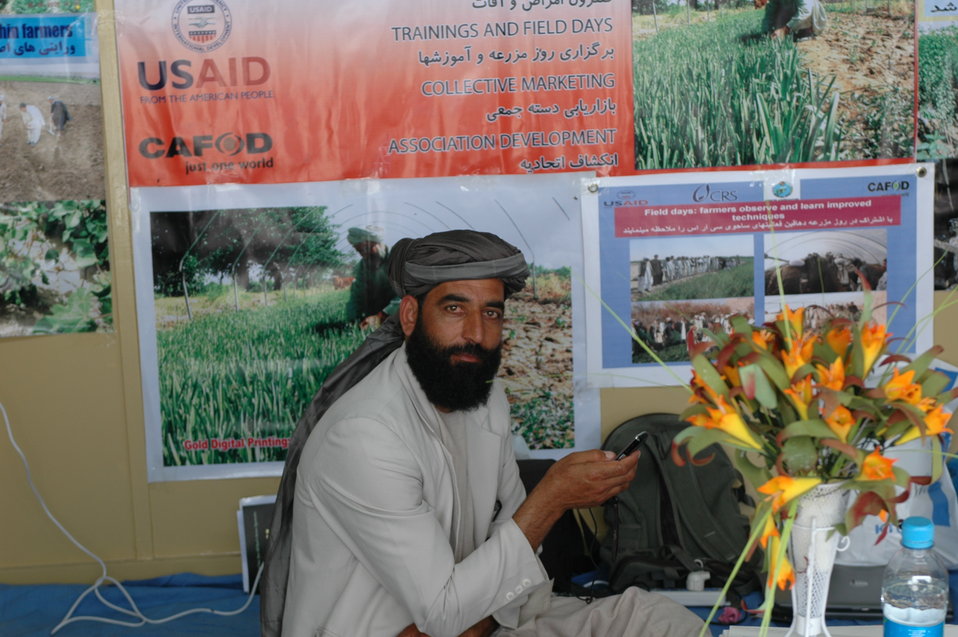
AgFair doing business2 052109 jfossler

On May 20, 2009, Ambassador Eikenberry joined government officials, farmers, agribusiness representatives, and international investors at the launch of the Kabul International AgFair on May 20. Held at the Ministry of Agriculture, Irrigation and Livestock’s Badam Bagh Demonstration Farm in Kabul, the fair showcases Afghanistan’s wealth of fresh produce, provides lucrative business opportunities, and demonstrates innovative agricultural technologies. It is expected to attract more than 50,000 participants from May 21-22.

U.S. Ambassador Karl Eikenberry and Afghan Acting Minister of Agriculture, Irrigation and Livestock (MAIL) Saleem Kunduzi gave opening remarks at the AgFair’s launch. “The United States Government is co-sponsoring national and regional AgFairs like this one to encourage trade and generate business opportunities in the agriculture sector,” Ambassador Eikenberry said. “In a country that is 80 percent rural, promoting licit crops and agriculture sector job creation are two essential steps to successful development in the region.”

Member of Parliament Abdul Salam Qazizada offered bold remarks, stating that we need to engage more with farmers in every province throughout the country.

Following the ceremony, Ambassador Eikenberry visited a number of vendors at the fair with Acting Minister Kunduzi and Mr. Qazizada. In speaking with farmers displaying their produce, Ambassador Eikenberry found that many have increased yields due to USAID assistance, have found regional buyers for their produce, and were grateful for the opportunities that AgFair provides.

Ambassador Eikenberry also discussed the state of agriculture with Minister Kunduzi and Mr. Qazizada. They agreed that while some progress has been made, there is a great deal more work to be done. Ambassador Eikenberry reiterated from his speech that USDA Secretary Vilsack recently met with Minister Rahimi to discuss the U.S. commitment to agriculture development. In a message to the Afghan public, Secretary Vilsack stressed that the USG aims to play a leading role by bringing more agriculture experts to the provinces and supporting agriculture research such as the Badam Bagh Demonstration Farm. Additionally, he looks “forward to working together to increase agricultural productivity, which will result in more jobs throughout the entire value chain, and a better quality of life for the citizens of Afghanistan.”

The United States Government is proud to support Afghan agriculture. Since 2002, America has provided more than 1 billion dollars in assistance to agriculture and rural development. AgFairs like the one Ambassador Eikenberry visited creates awareness of Afghanistan’s expanding agricultural sector, promotes new agricultural technologies that increase productivity, and provides a forum to connect farmers to local and international buyers. These results will contribute to Afghanistan’s prosperity.

We are already seeing the results of these fairs. Since 2007, Afghanistan’s agricultural fairs have attracted more than 500,000 participants from across the nation and the world, generated millions of dollars in sales of the country’s high-value produce, and provided participants with a competitive edge in one of the fastest growing markets in Central Asia.

As Ambassador Eikenberry stated, “The word is out – with over 180 international businesses represented at this fair, it is obvious that Afghanistan has sparked the interest, and appetite, of the world.”